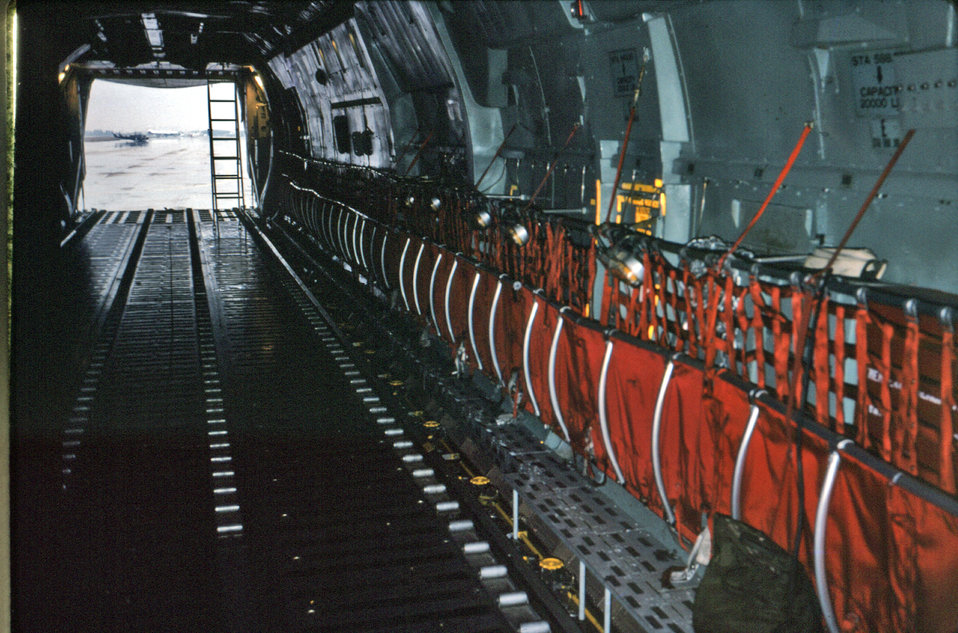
This 1976 photograph was taken looking out the rear of a C-141 jet from its interior, where a mobile quarantine facility, i.e., see PHIL ID# 7234, was loaded on and off during medical evacuations.